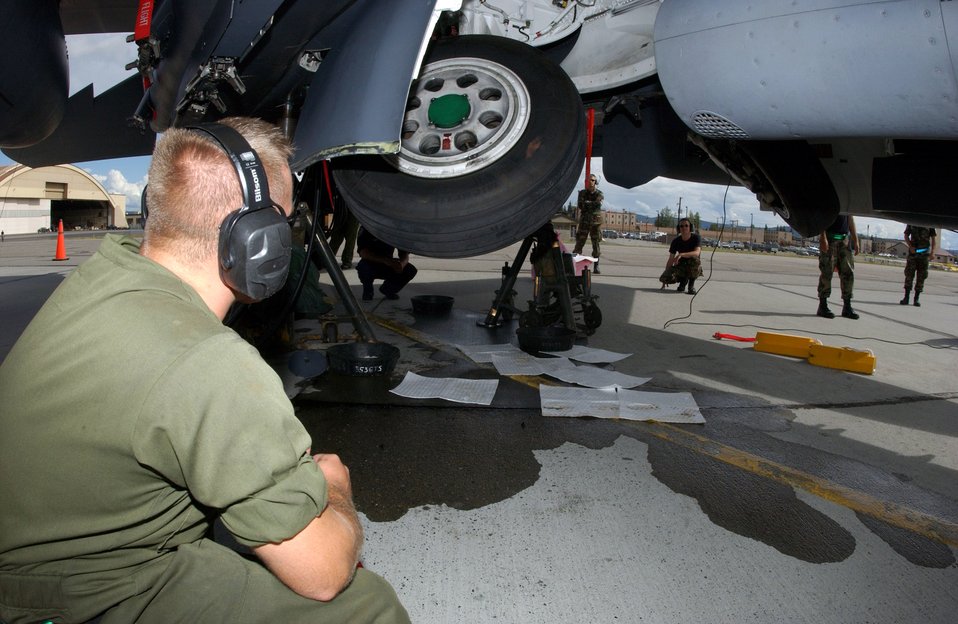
Maintaining aircraft at Red Flag-Alaska 2007

Senior Airman Aaron McGee and other maintainers observe the operation of the landing gear during a maintenance check July 12 on an F-15E Strike Eagle that is participating in Red Flag-Alaska 2007 at Eielson Air Force Base, Alaska. Red Flag-Alaska is a Pacific Air Forces-directed field training exercise for U.S. and coalition forces flown under simulated air-combat conditions. Airman McGee is assigned to the 335th Aircraft Maintenance Unit at Seymour Johnson AFB, N.C.